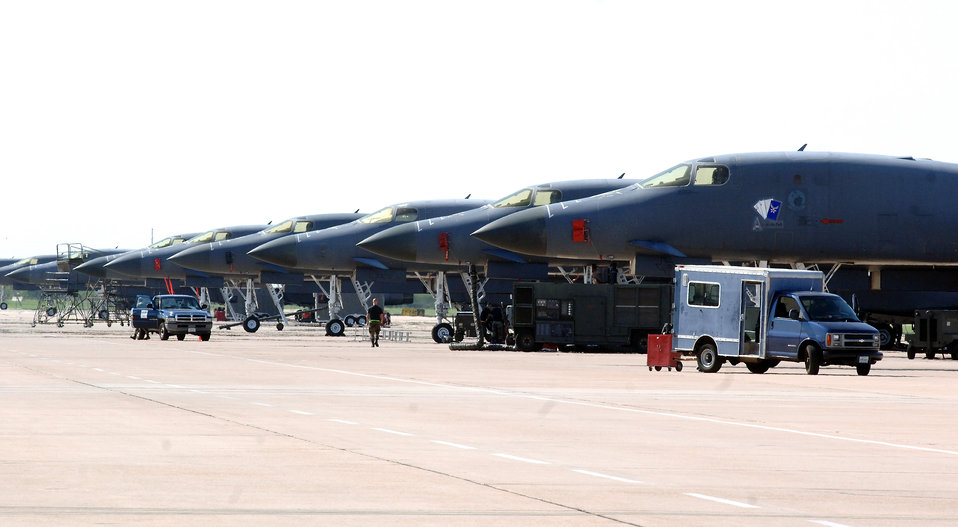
'Bone' makes evolving mark on war on terrorism

B-1B Lancers line the ramp at Dyess Air Force Base, Texas. Dyess has the only B-1 pilot-training facility in the Air Force.